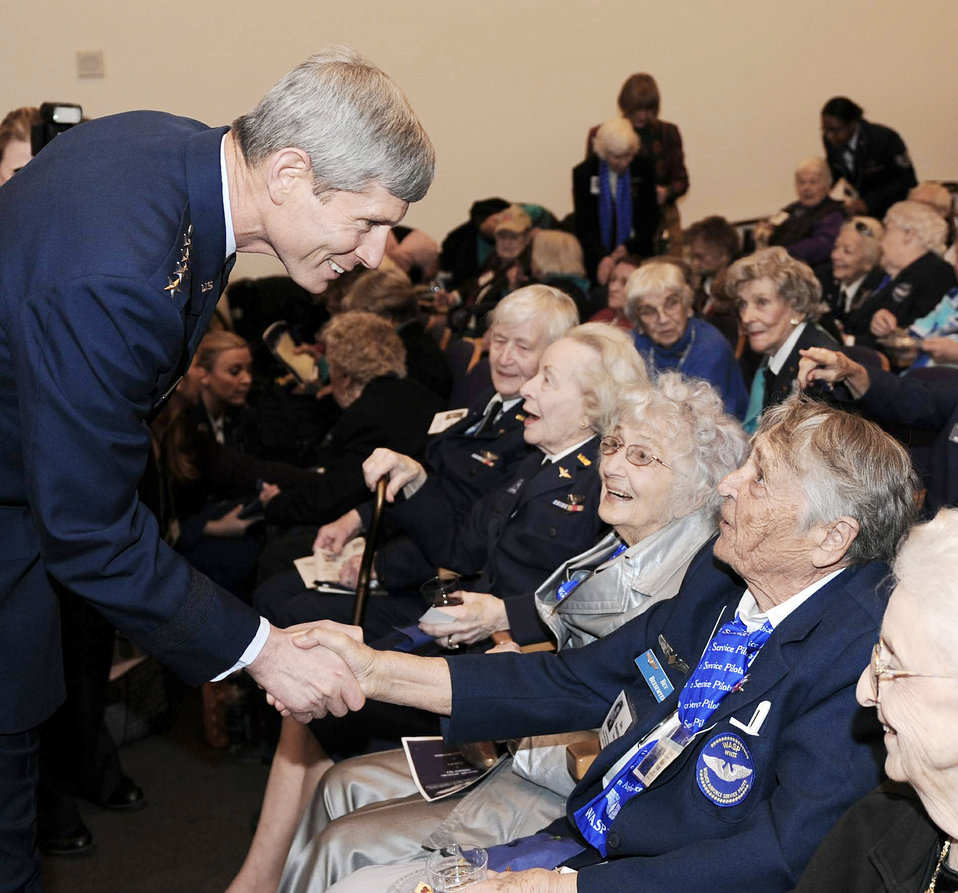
Female World War II pilots lay wreath at Air Force Memorial

Chief of Staff of the Air Force Gen. Norton Schwartz shakes hands March 10, 2010, with Bev Bessemyer during a reception at the Women in Military Service to America Memorial in Arlington, Va.